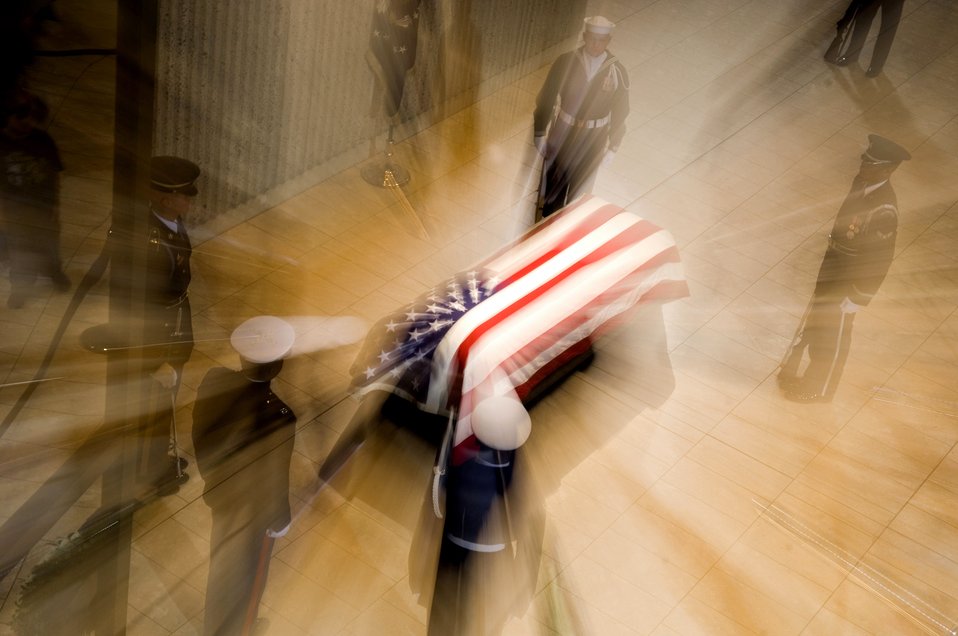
At the library

Former President Gerald R. Ford's body lays in repose while the Guard of Honor stands in formation at the Gerald R. Ford Presidential Library and Museum Jan. 2 in Grand Rapids, Mich.